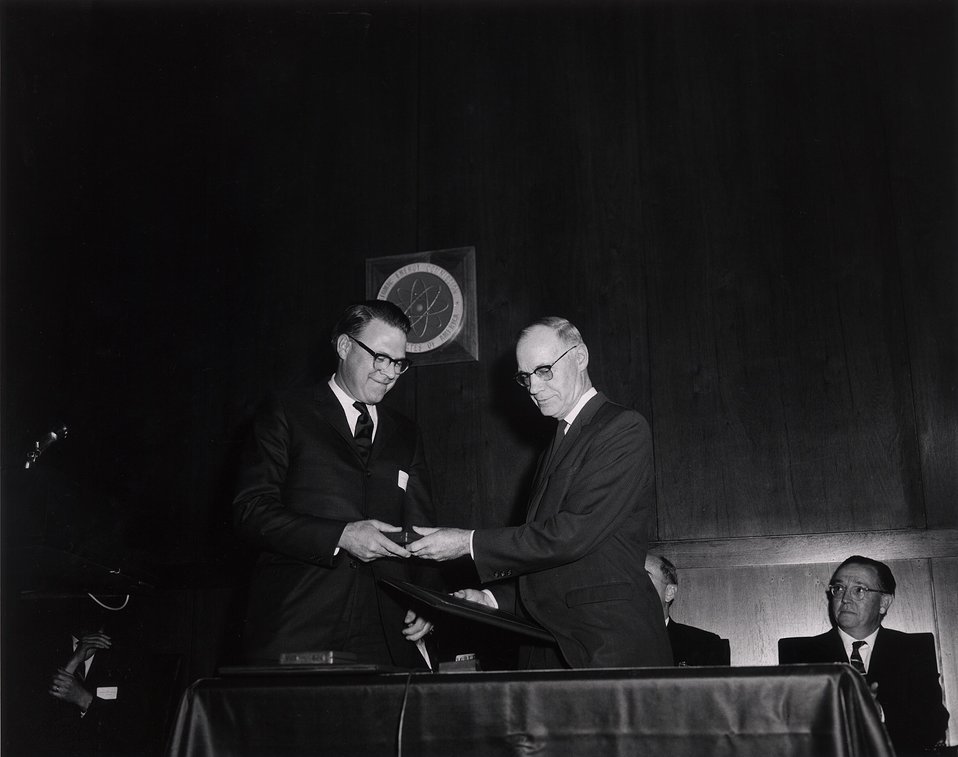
E.O. Lawrence Awards, 1967. Carnegie Institution Auditorium. April 27, 1967. L- Dr. Robert N. Thorn. R- Dr. L.R. Hafstad, Chairman, GAC.